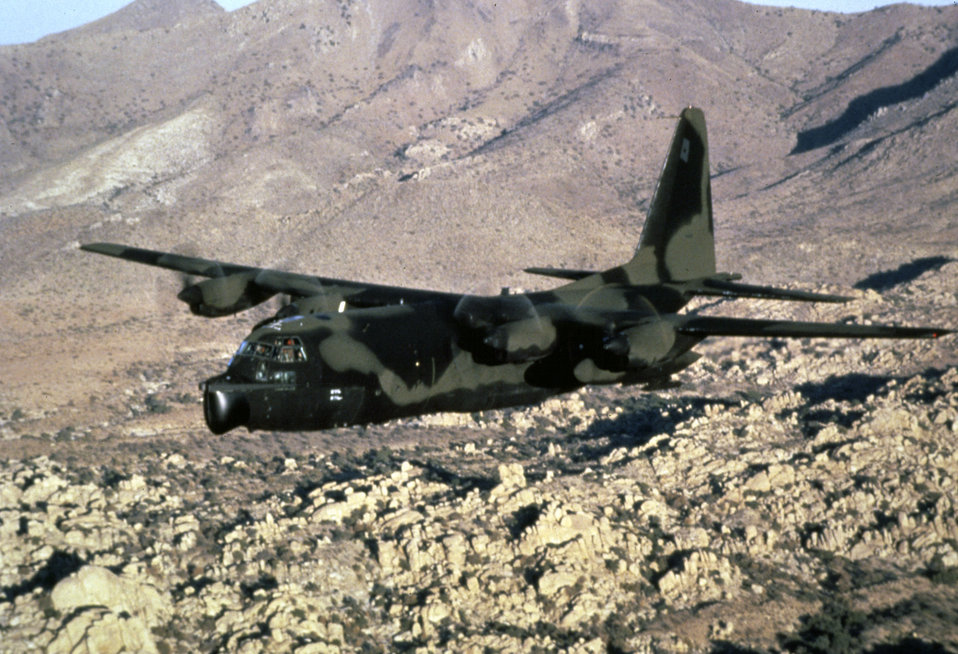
MC-130H Combat Talon I, June 1991